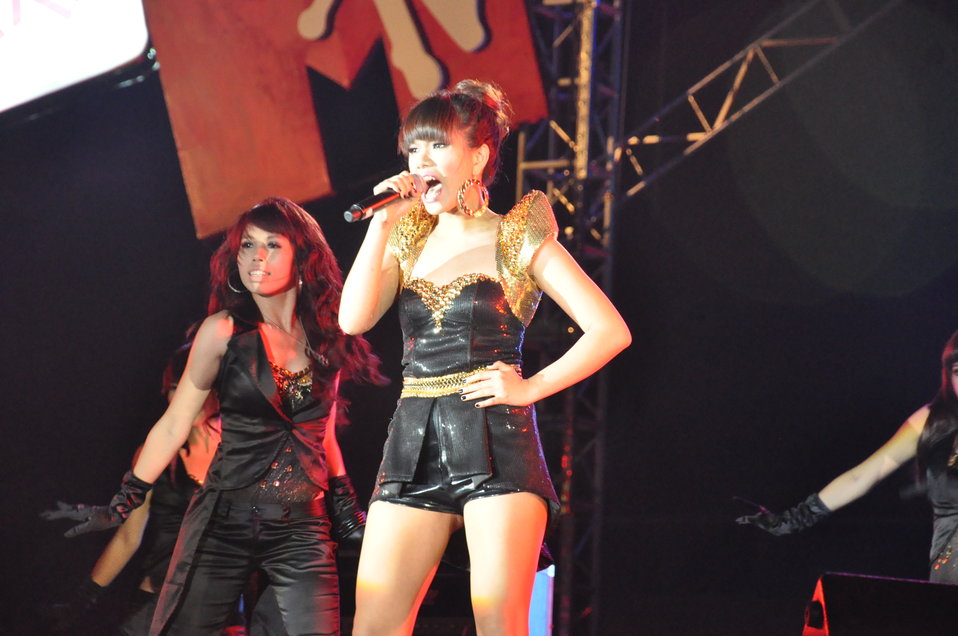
USAID MTV EXIT HCMC Concert

Concert in Ho Chi Minh City against human trafficking, April 17, 2010